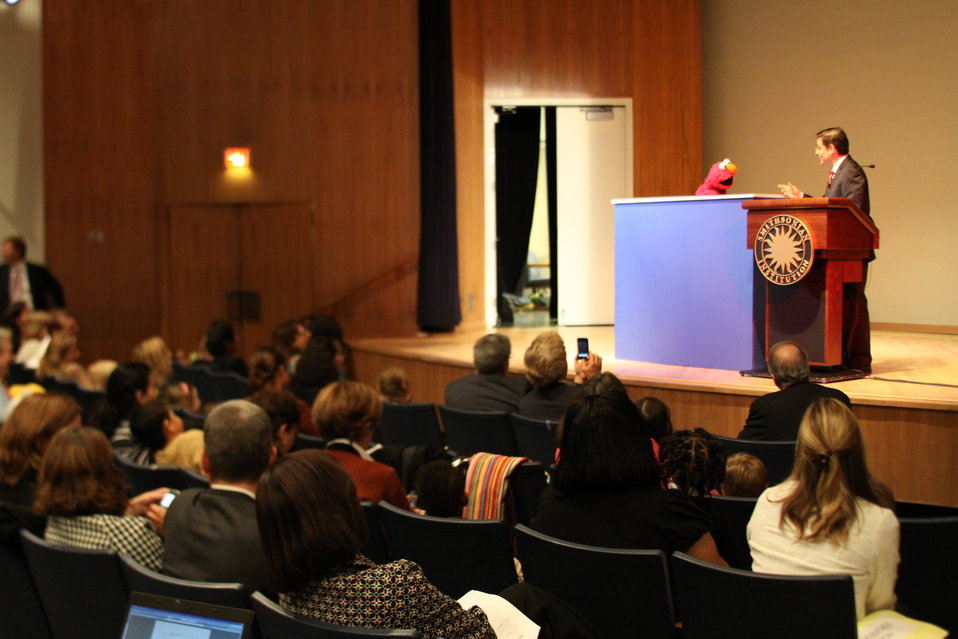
March 12, 2010- Smithsonian Broadband with Elmo